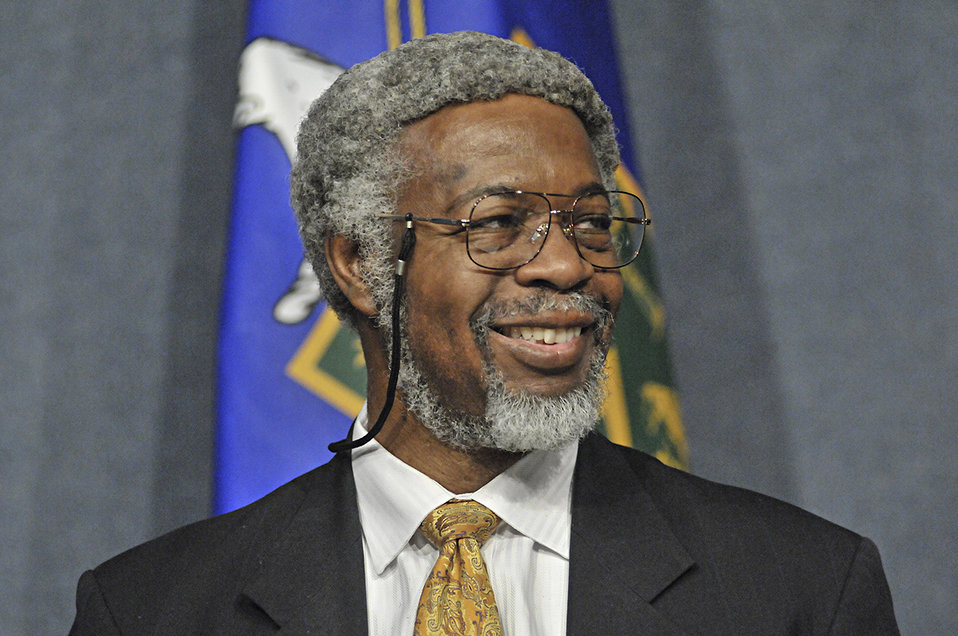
Panel: Increasing Minority Participation in the Energy Sector

Dr. S. James Gates, Professor at the University of Maryland, speaks on September 24, 2014, at the Minorities in Energy Initiative launch.